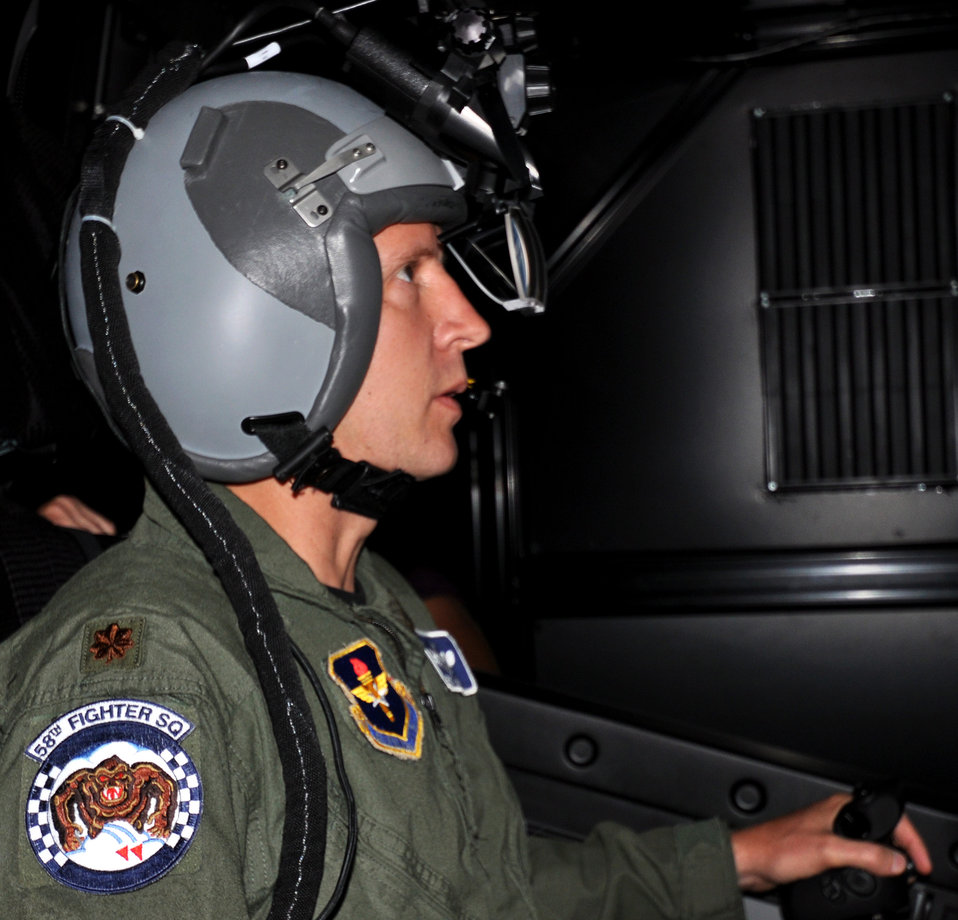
New F-35 classroom

Maj. Eric Smith flies the 33rd Fighter Wing mission rehearsal trainer for the F-35 Lightning II during a demonstration May 27, 2010, at Eglin Air Force Base, Fla. The trainer will use state of the art technology to further familiarize students with the F-35. Major Smith is the 58th Fighter Squadron assistant operations director.